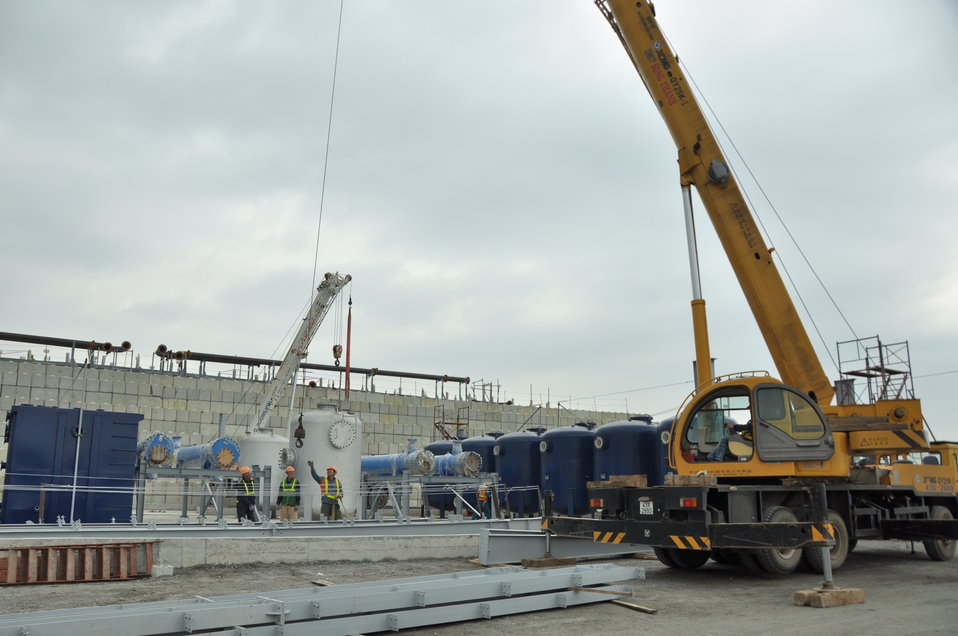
USAID Dioxin Contamination Project Progress: Water Treatment System

Progress at the Environmental Remediation of Dioxin Contamination Project at the Danang Airport

December 4, 2013